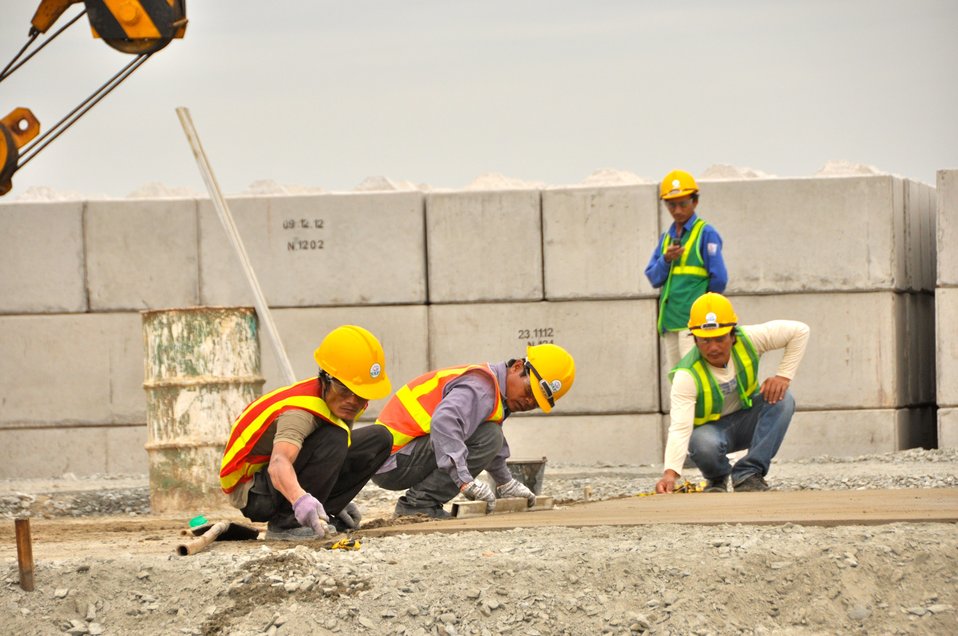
Site Preparation for Environmental Remediation of Dioxin Contamination at Danang Airport

Danang Airport, January 22, 2013